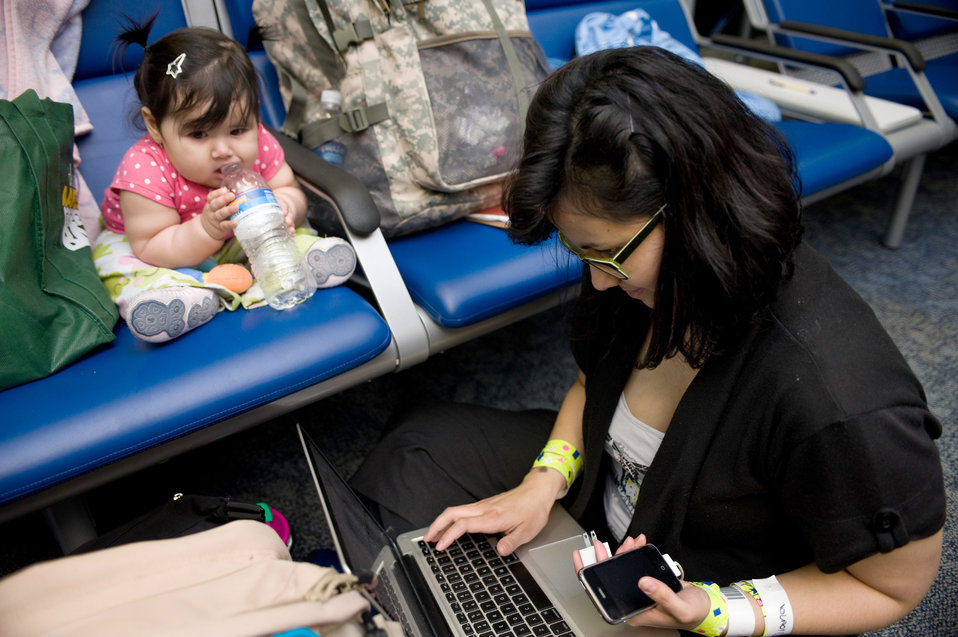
Operation Pacific Passage

Eight-month-old Iliana Sierra watches as her mother, Betzabeth Sierra, attempts to contact family members after the pair arrived from Japan, March 25, 2011, at Travis Air Force Base, Calif. Following the earthquake and tsunami that hit Japan on March 11, hundreds of family members from military bases in Japan voluntarily relocated to the U.S.